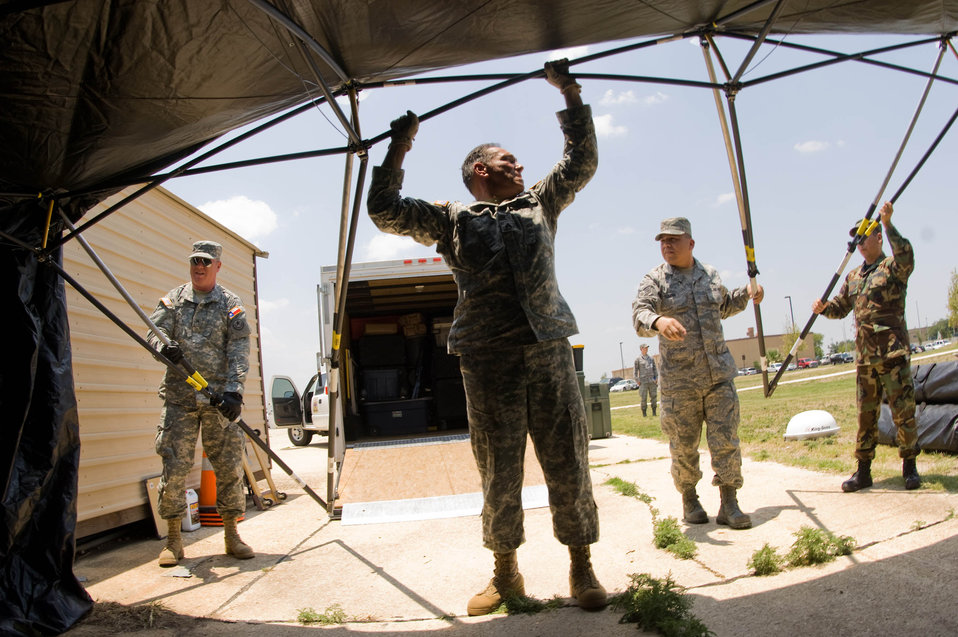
Setting up the comm

(Left-right) Army Sgt. Marc Jones, Army Staff Sgt. Robert Ribeiro, Staff Sgt. Gonzalo Roman and Master Sgt. Mark Martinez set up a tent that will provide satellite and cellular communications next to the Emergency Operations Center July 22 at Brooks City-Base, Texas.